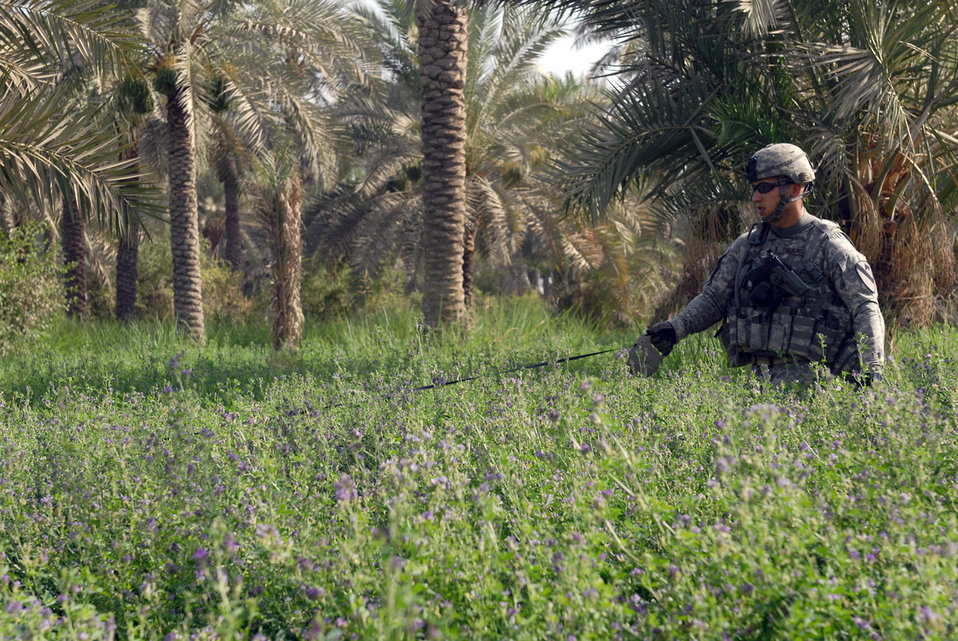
Military working dogs supplement sweep operation

Brush and plants make for difficult terrain as Army Staff Sgt. Marcelo Figueroa, assigned to the provost marshall's office at Camp Victory in Baghdad, and his German Shepherd Lasso, participate in a clearing operation June 13 in nearby Doura. Sergeant Figueroa is with the North Carolina National Guard's Company A, 252nd Combined Arms Battalion, 30th Heavy Brigade Combat Team.